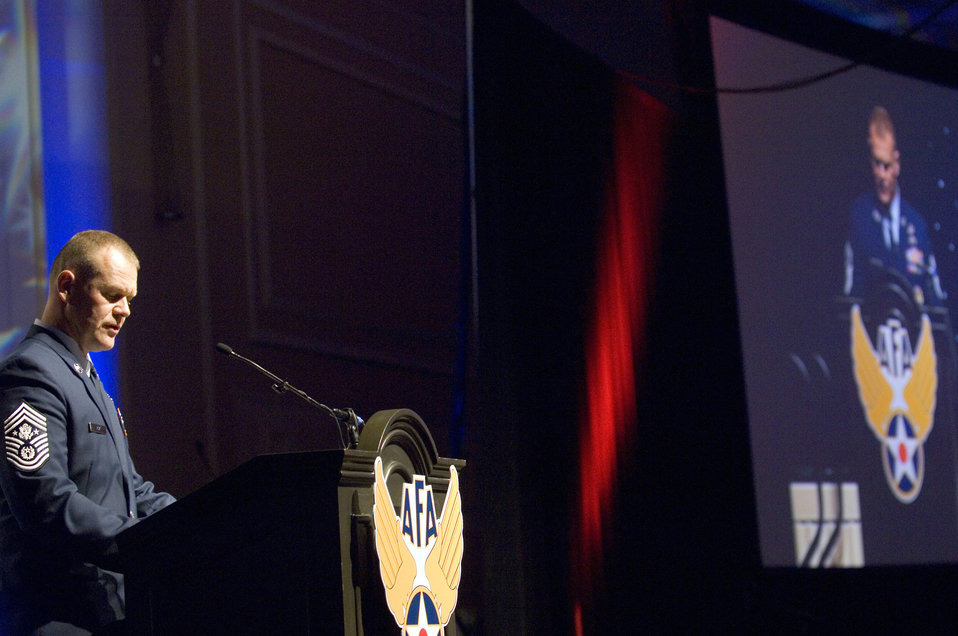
Air Force officials recognize 12 Outstanding Airmen of Year

Chief Master Sgt. of the Air Force James A. Roy recognizes the 12 Outstanding Airmen of the Year Sept. 14, 2009, during the 2009 Outstanding Airmen of the Year dinner at the Gaylord National Hotel and Convention Center, National Harbor, Md.